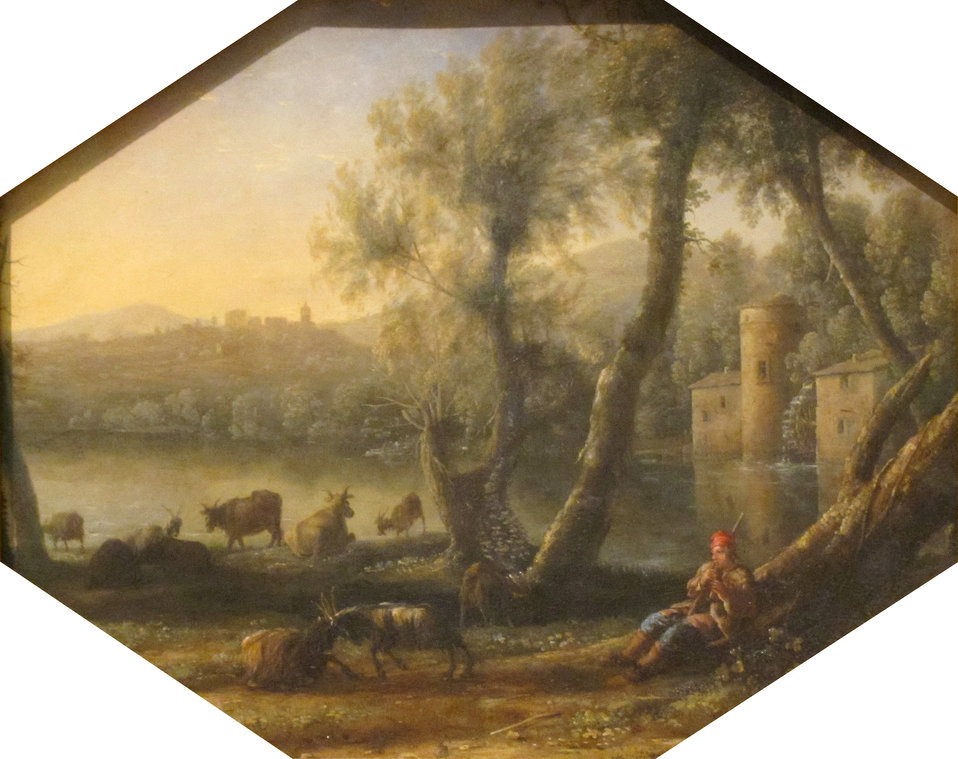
'Pastoral Landscape', oil on copper painting by Claude Lorrain, c. 1636-7, Art Gallery of New South Wales